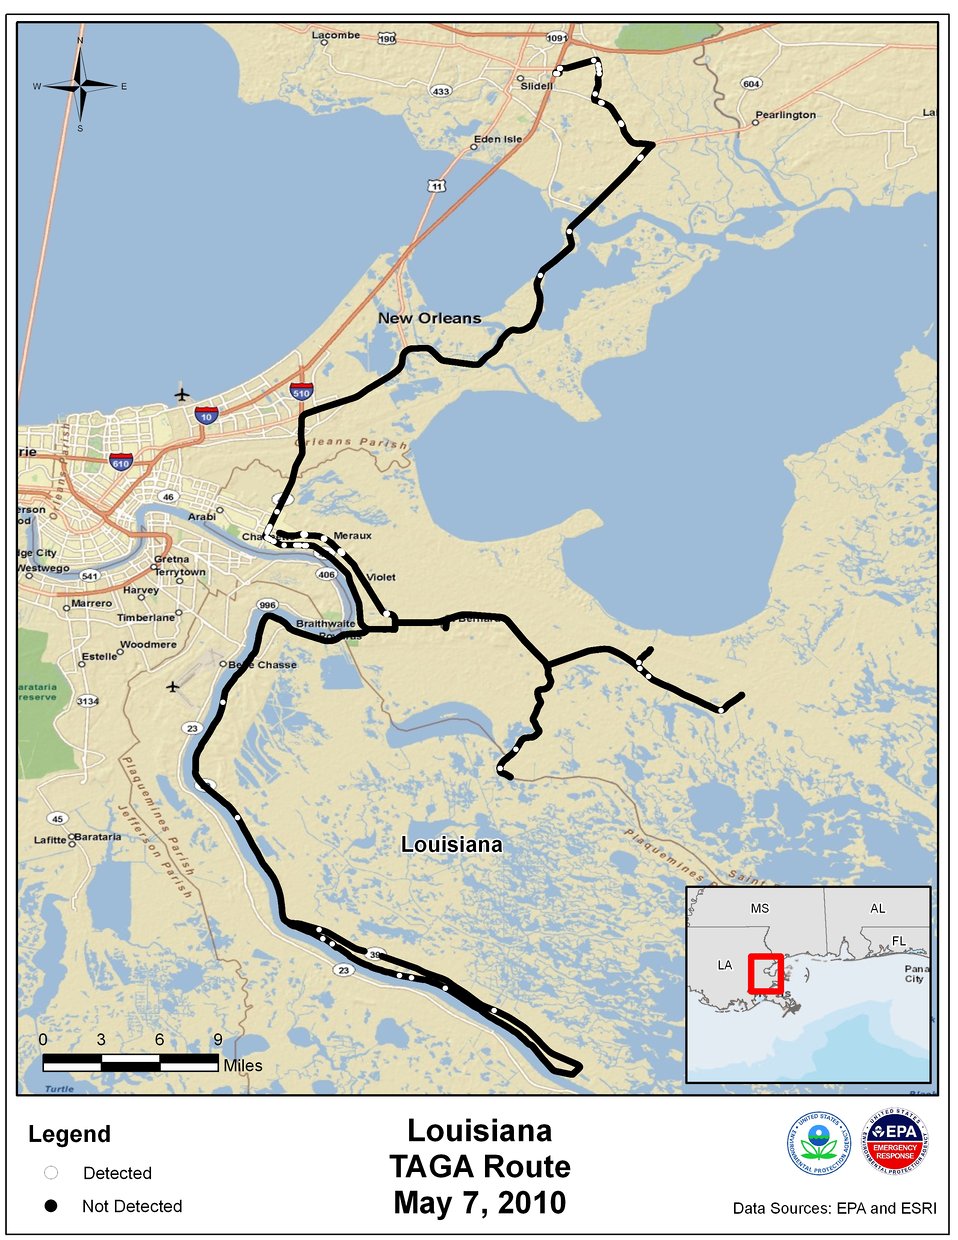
EPA TAGA Air Monitoring Locations May 7, 2010